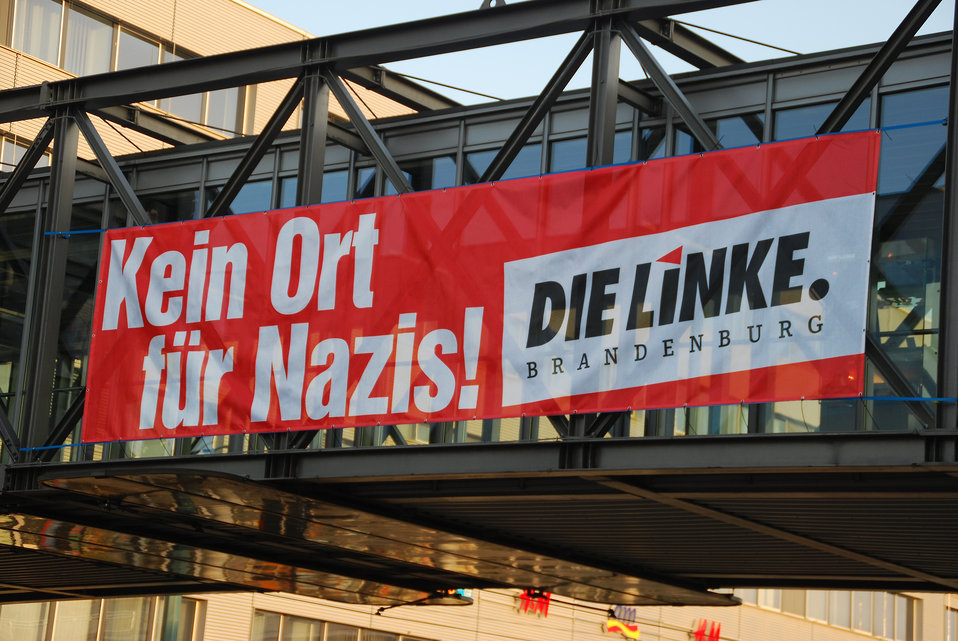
Proteste gegen den Nazi-Aufmarsch am 24.3.2012 in Frankfurt (Oder)